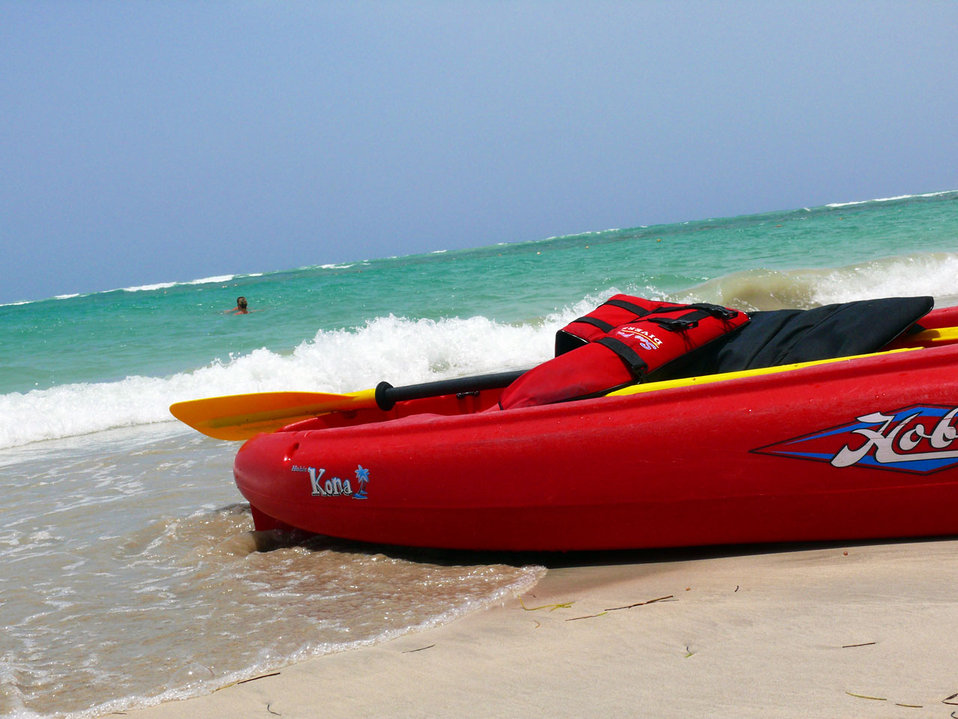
Kayak on the sea.